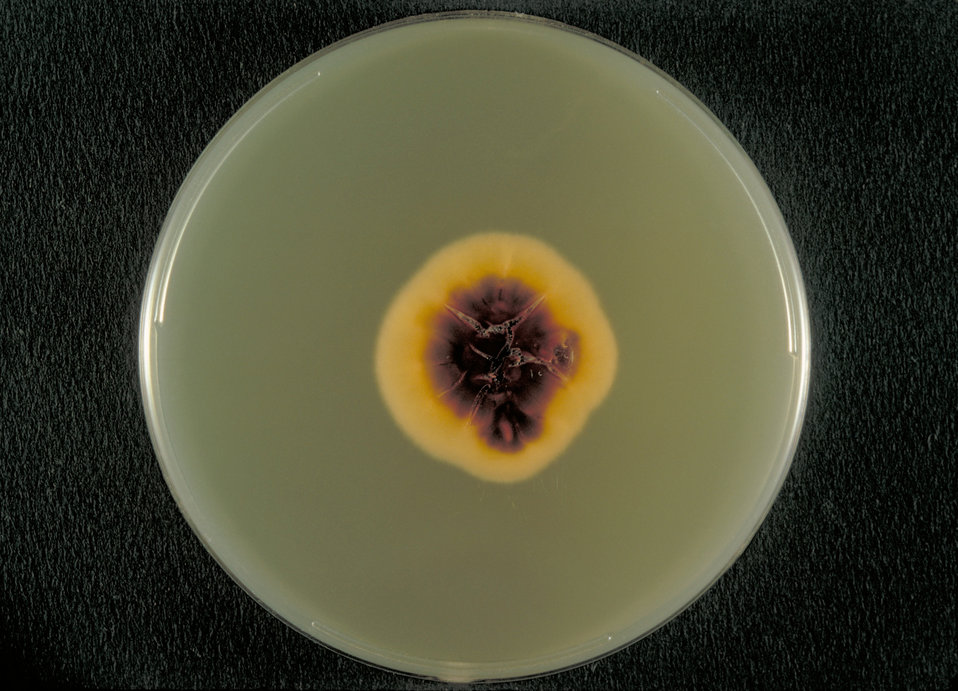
This is a bottom view of a Sabouraud's dextrose agar plate culture growing a Mexican isolate of T. rubrum var. rodhaini.